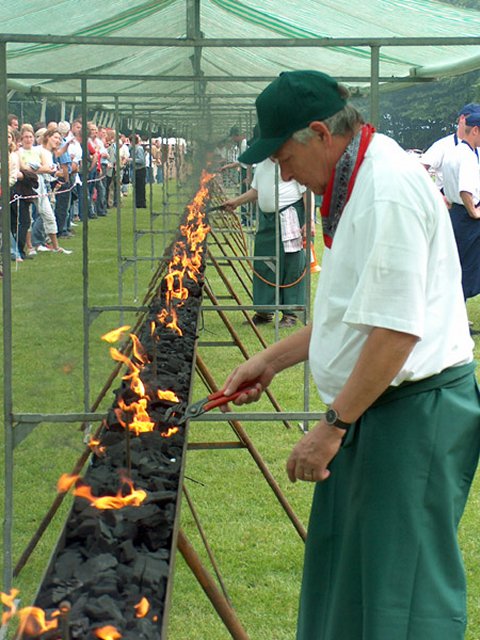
Nederlands: Record BBQ-spies van 156 meter uit één stuk op een even grote, broquetten gestookte barbeque. Eigen werk. Record BBQ skewer of 156 meters in one piece on an equal, broquet fired barbeque.